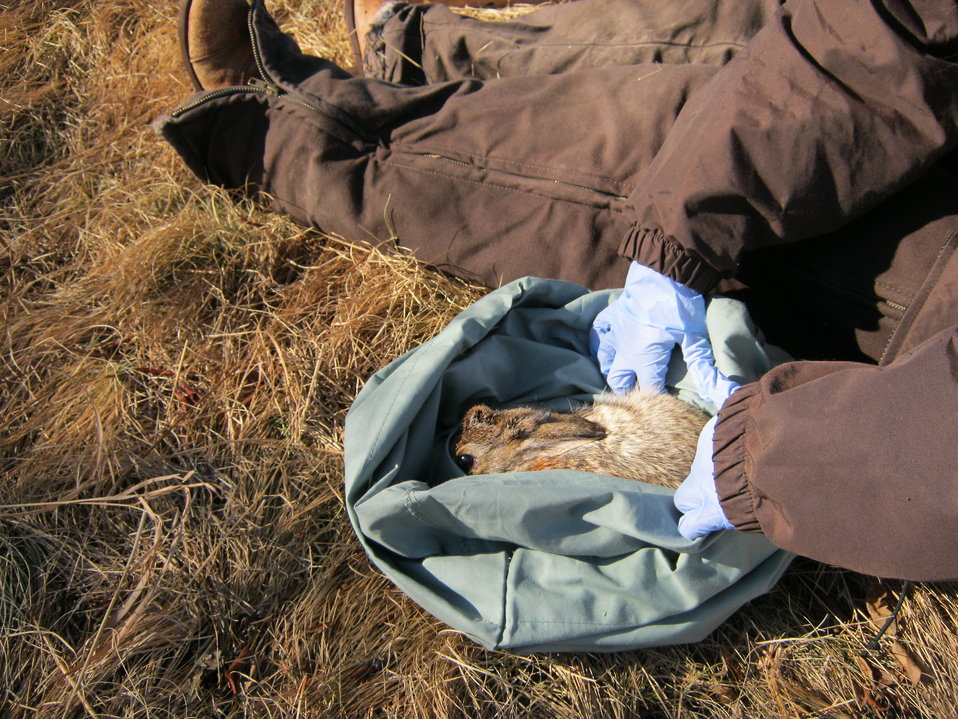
Finding New England cottontails

A close-up of the cottontail that will help identify if this area is home to eastern or New England cottontails. That information will help us protect the New England cottontail, a candidate for protection under the Endangered Species Act.